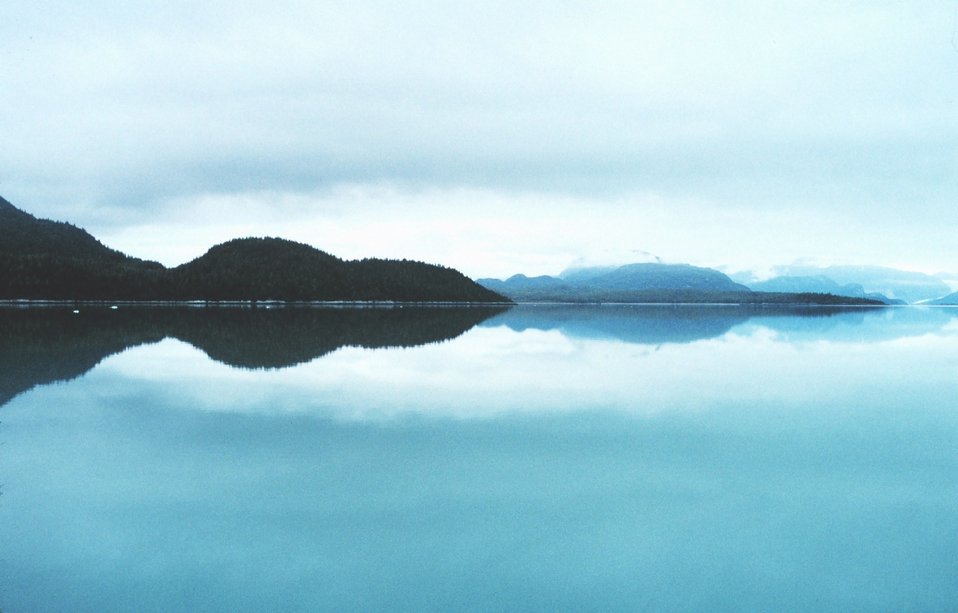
Reflections on a still day